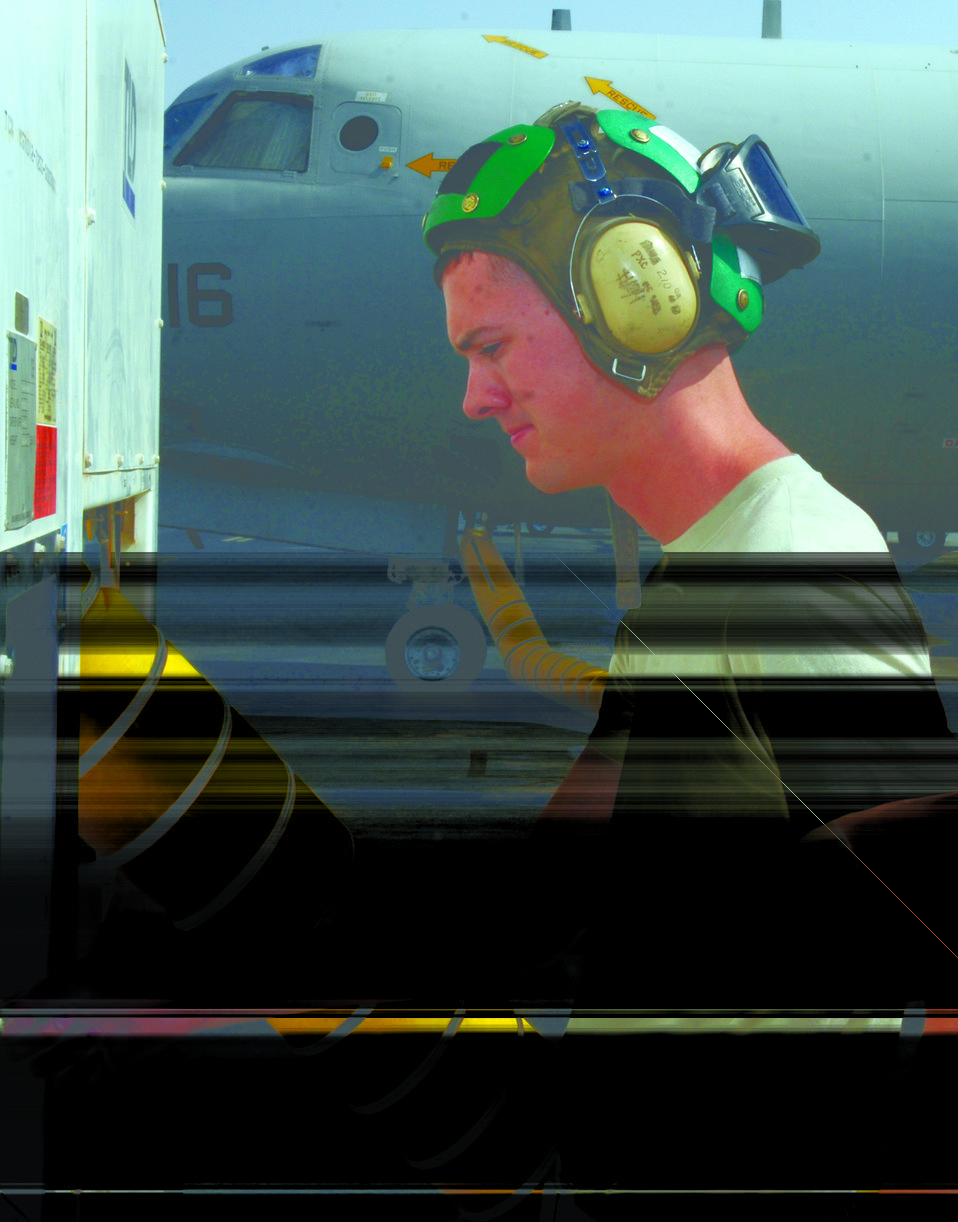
VP-46: GWOT Jack of all trades

Aviation Electronics Technician 3 Daniel Mayers adjusts an air conditioning cart used for cooling the Navy's P-3 Orion, at a base in Southwest Asia Oct. 16. The P-3C is a land-based, long-range anti-submarine warfare patrol aircraft and provides tactical surveillance, reconnaissance, strike support, fleet support and warning, and monitoring of electromagnetic signals of interest for intelligence analysis.